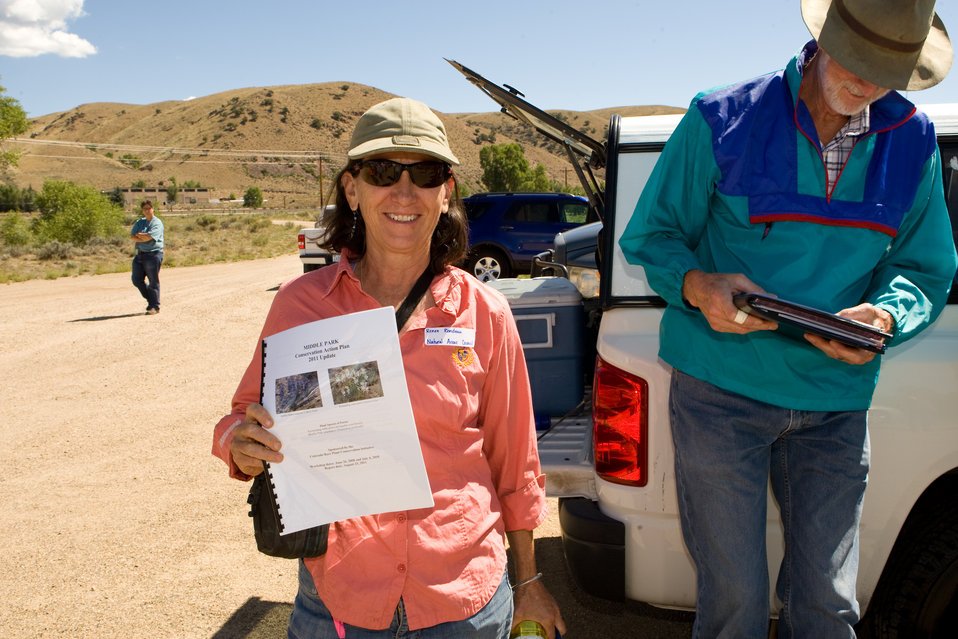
Colorado Rare Plant Conservation Initiative

The Colorado Rare Plant Conservation Initiative (RPCI) is a partnership of 23 statewide and regional agencies, private organizations, and academic institutions working to conserve 121 rare plants in Colorado. As part of these efforts the group developed the Colorado Rare Plant Conservation Strategy, developed Best Management Practices to reduce energy development impacts, addressed climate change, and developed focused strategies for the conservation of individual species at eight priority landscapes. The group has also worked to coordinate volunteer efforts for plant conservation across the state.